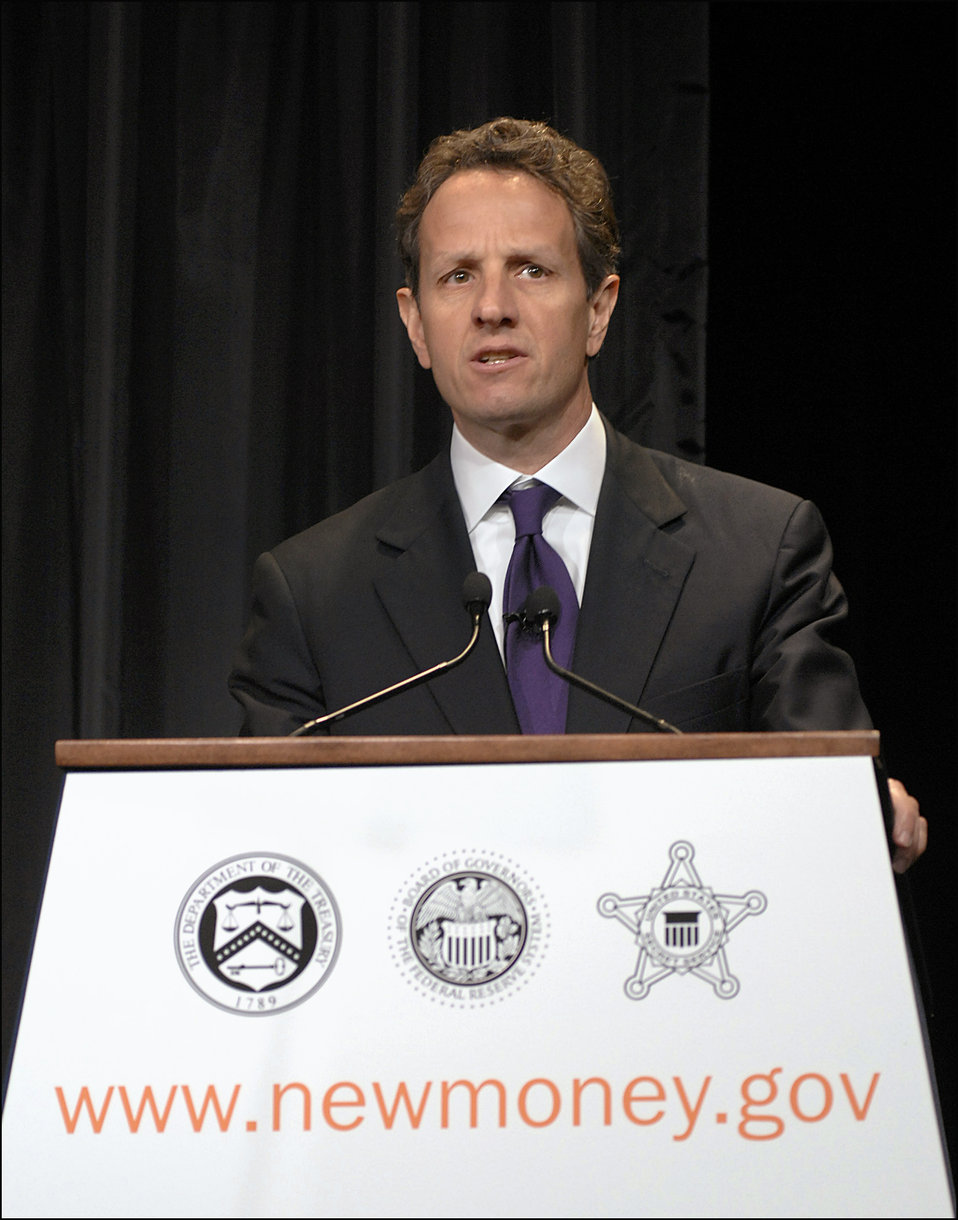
Unveiling of new $100 note, 4/21/2010

Treasury Secretary Geithner speaks at the $100 note unveiling at the Treasury Department on April 21, 2010.